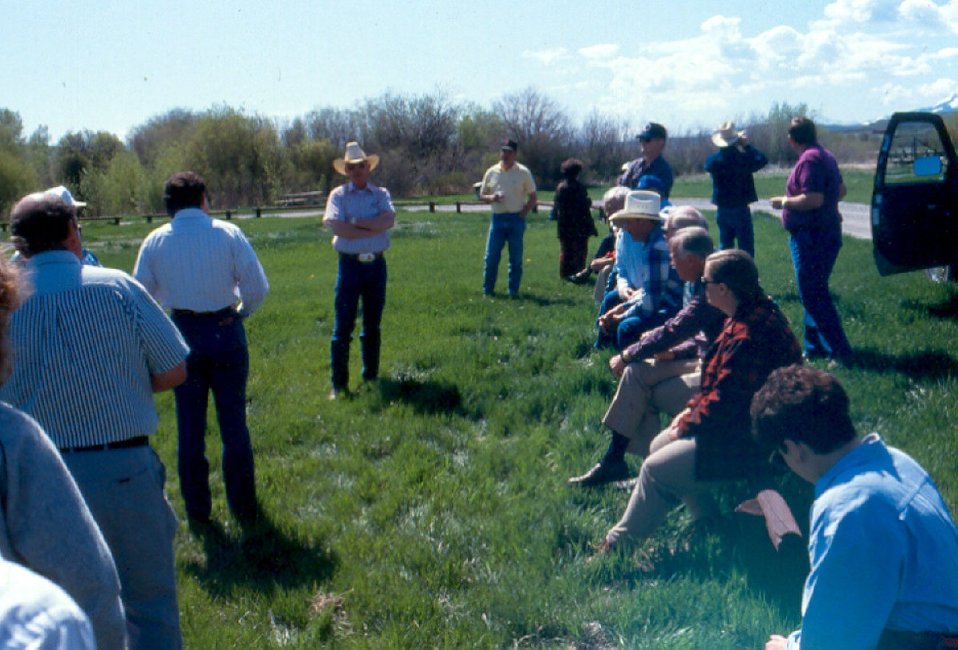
People Salmon Field Office UCSC Upper Columbia Salmon Clearwater District